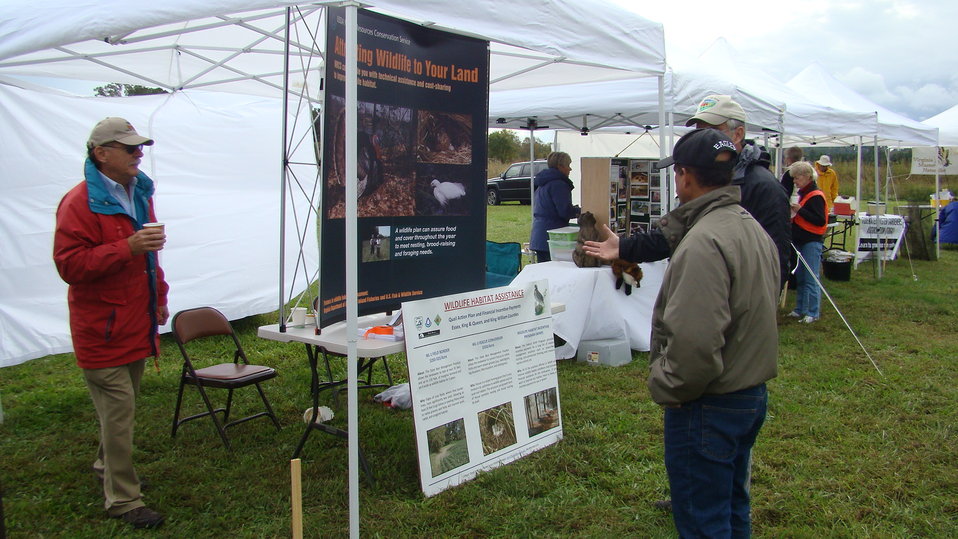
Rappahannock River Valley NWR 15th Anniversary

USDA Natural Resource Conservation Service exhibit at 'Go Wild!'